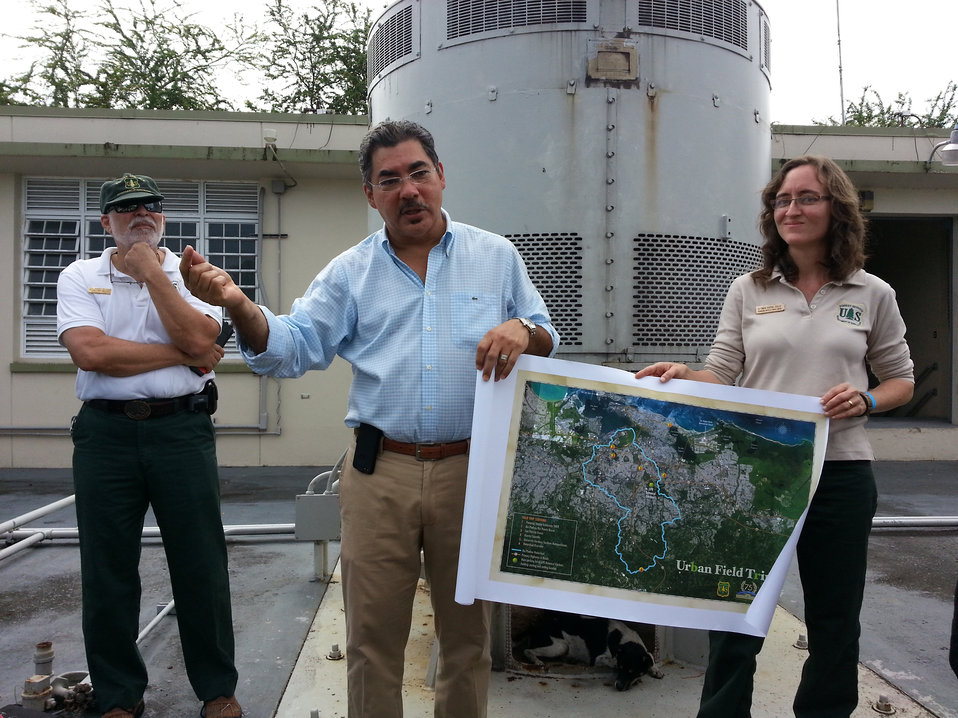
IITF4

University of Puerto Rico Environmental Health Department Director José Seguinot speaks about the potential vulnerabilities of urban areas to floods and the role of urban hydrology at the Baldorioty de Castro storm water pump station in San Juan, Puerto Rico on May 20, 20014. This was the first stop of an urban field trip as part of the International Institute of Tropical Forestry’s 75th anniversary celebration. (Standing L to R in background U.S. Forest Service International Institute of Tropical Forestry Director Ariel E. Lugo and Research Ecologist Tamara Heartsill Scalley).